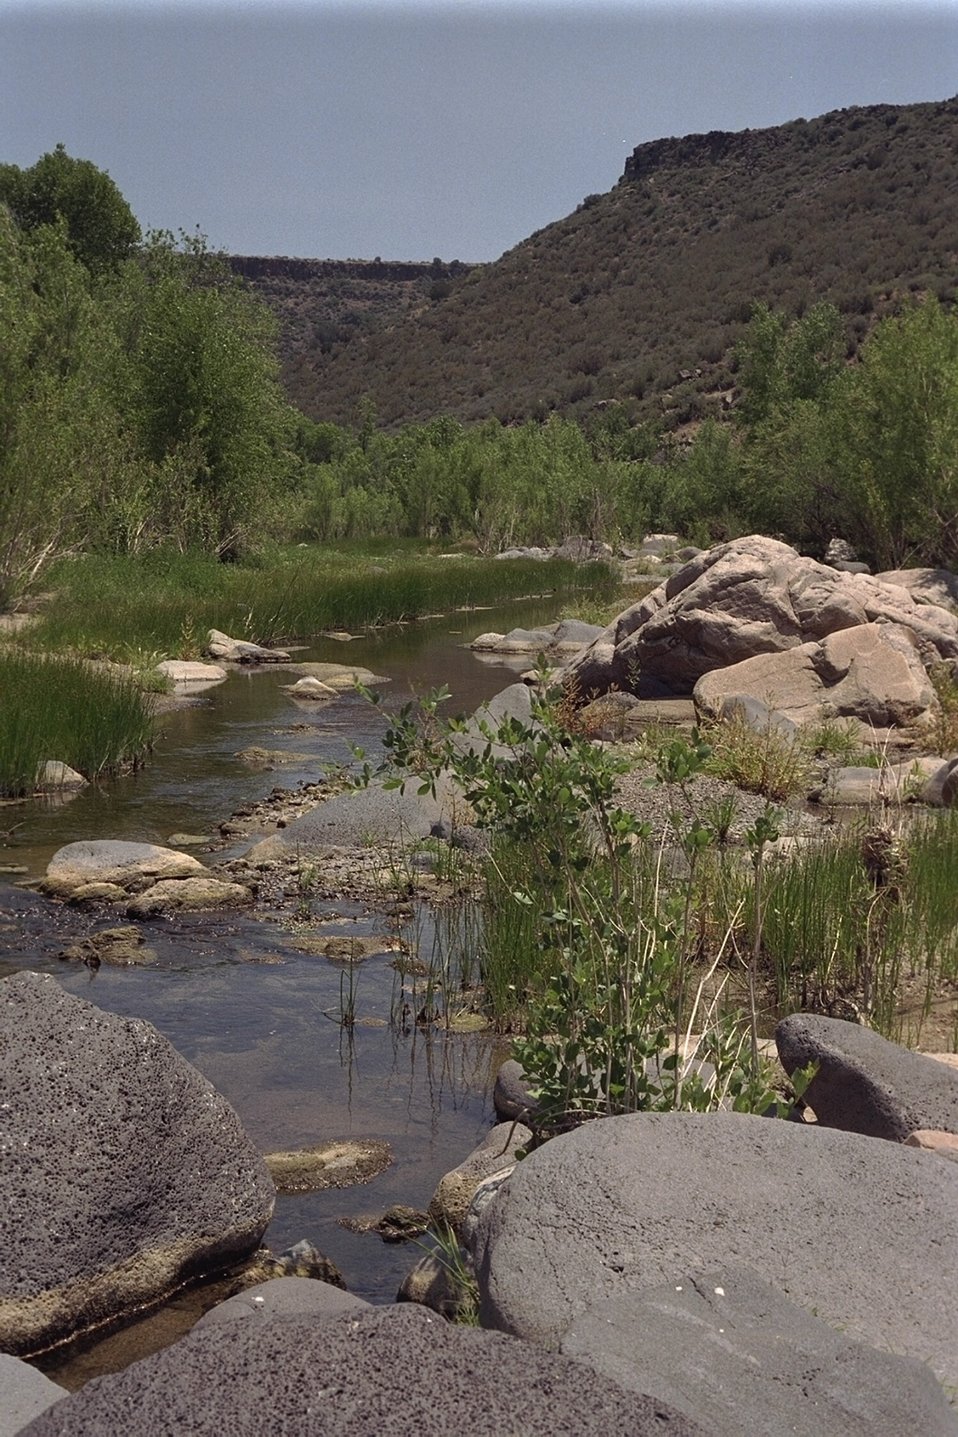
The Agua Fria River runs through the canyon that shares its name.